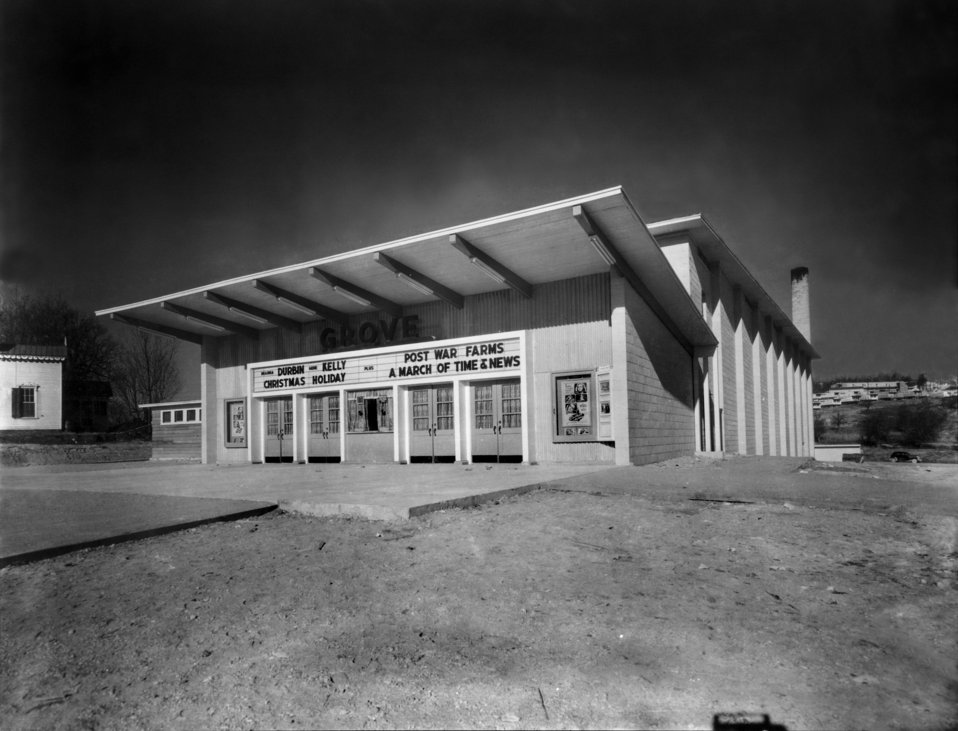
Grove Theater

MED137 DOE photo by EdWestcott

Oak Ridge Tennessee 1944